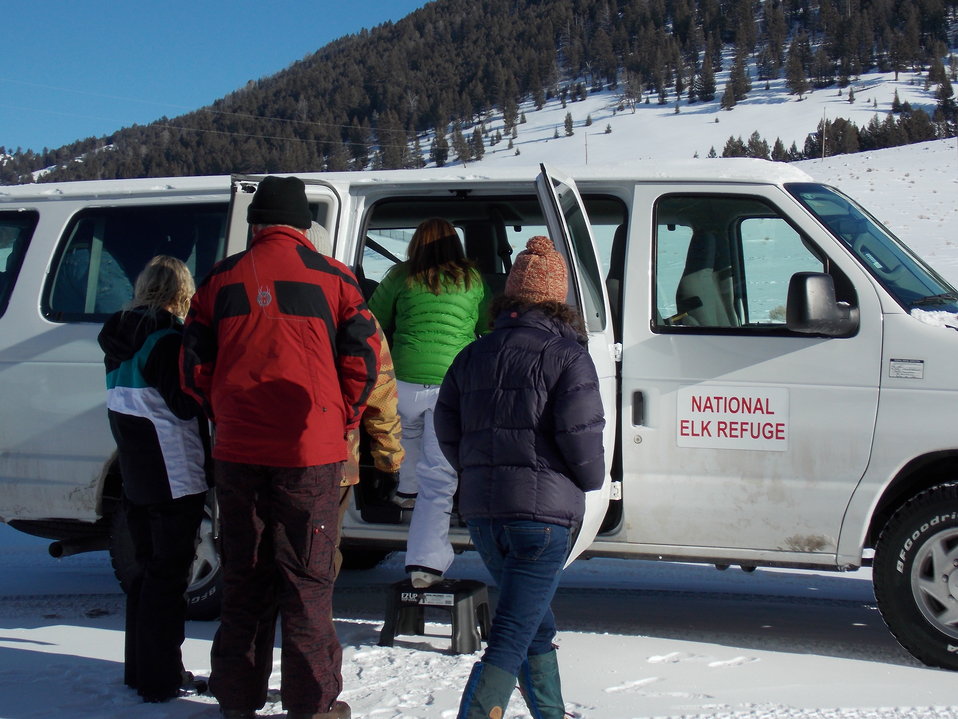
From the Comfort of a Van

National Elk Refuge winter wildlife excursions are conducted from a 15-passenger van, driven by a Refuge naturalist.